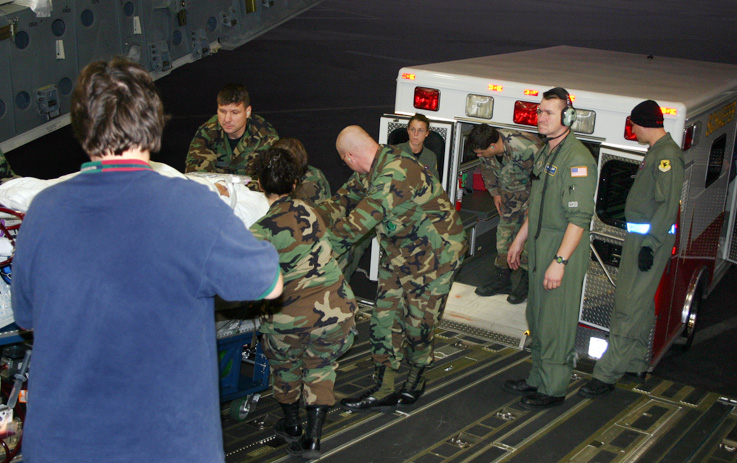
Medical team journeys across Pacific

LOS ANGELES (AFPN) -- The Wilford Hall Medical Center team arrives from Hawaii with 7-year-old Meaghan Ababa, and carefully offloads her from the C-17 Globemaster III into a waiting ambulance. She was on her way to the Children's Hospital in Los Angeles where doctors were standing by to perform a heart transplant if needed.